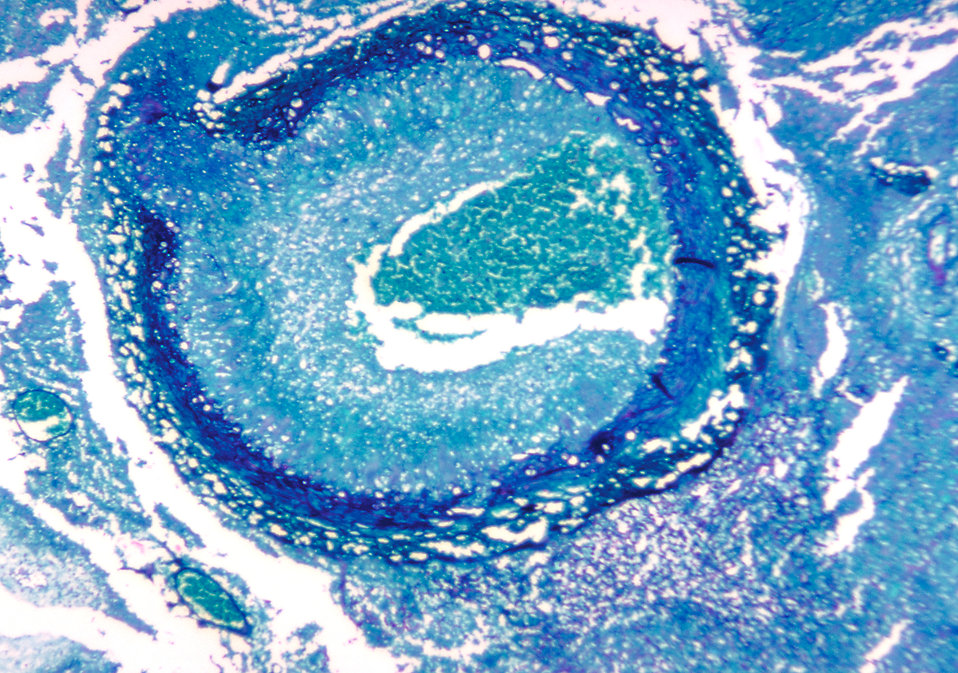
This micrograph depicts the histopathologic changes seen in phaeohyphomycosis due to Bipolaris hawaiiensis.